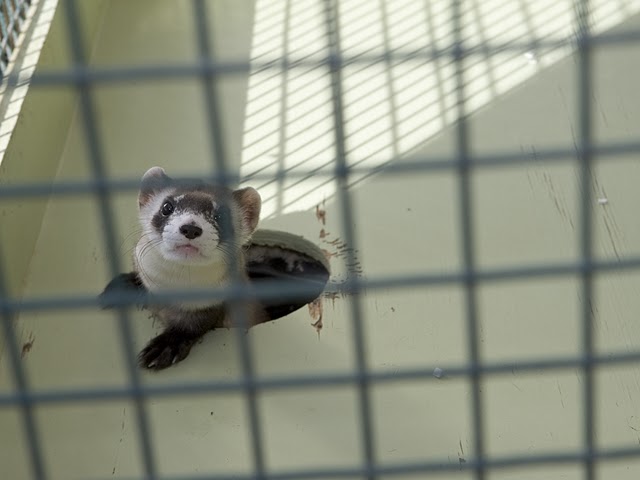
National Black-footed Ferret Conservation Center